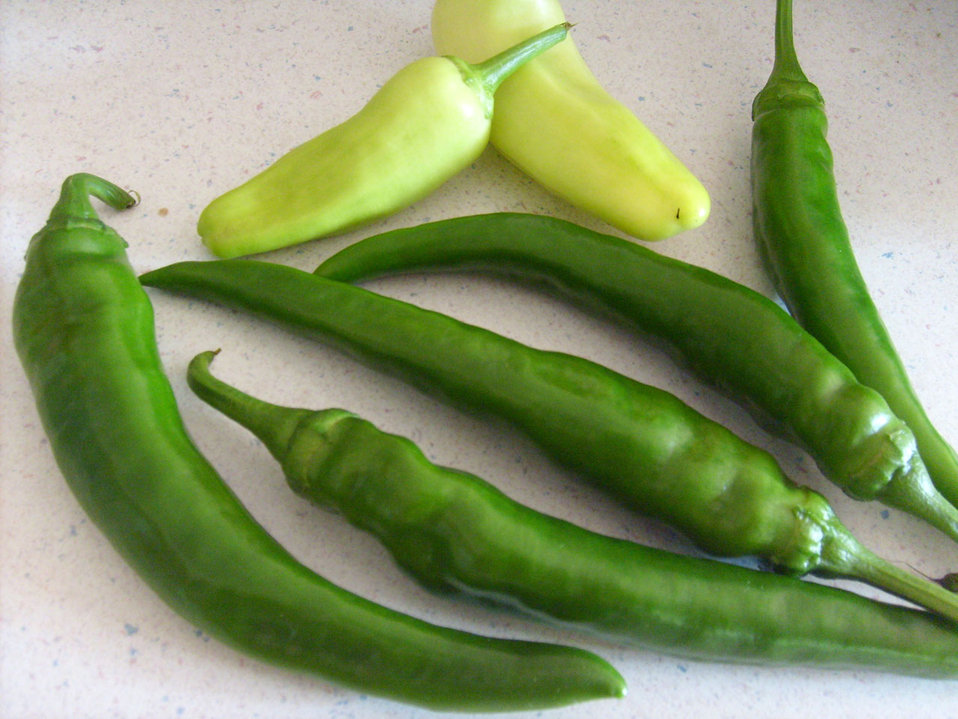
Peppers

Hot peppers.